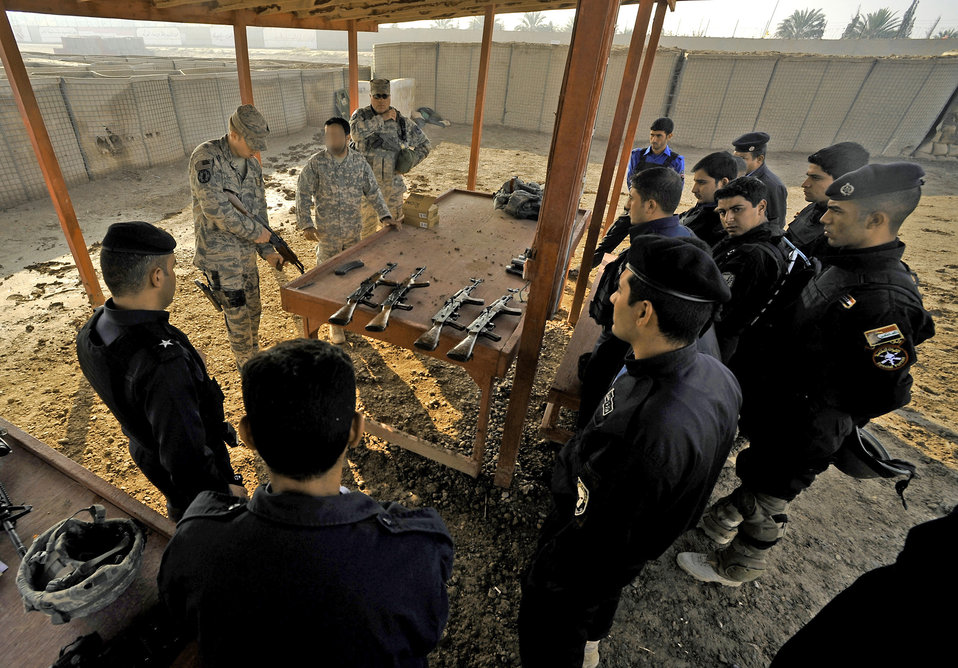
Airmen lead training course for Iraqi police

Staff Sgt. Michael Gomez instructs new Iraqi police officers at a firing range Nov. 21, 2009, in Baghdad, Iraq. Sergeant Gomez is assigned to the 732nd Expeditionary Security Forces Squadron Det. 2.